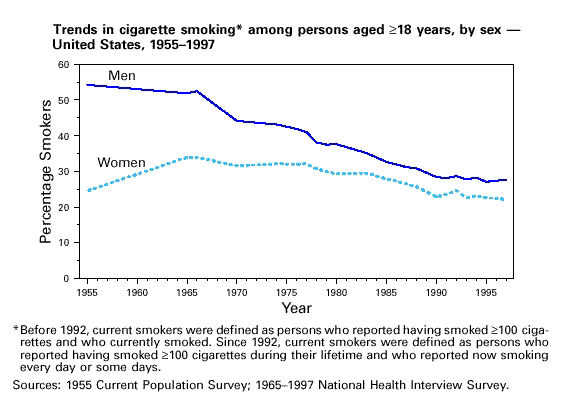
Line graph showing trends in cigarette smoking among persons aged 18 years and above, by sex.